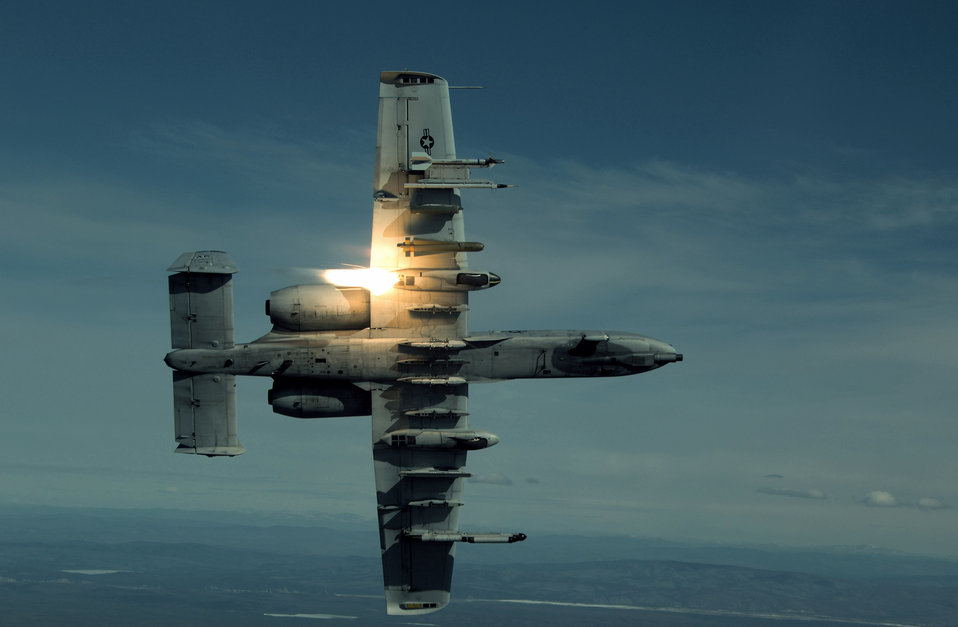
March 10 airpower summary: A-10s conduct shows of force

An A-10 Thunderbolt II, like this one, provides top cover and close-air support to coalition forces in Afghanistan and Iraq. The A-10s perform shows of force to deter enemy activities and protect ground forces.